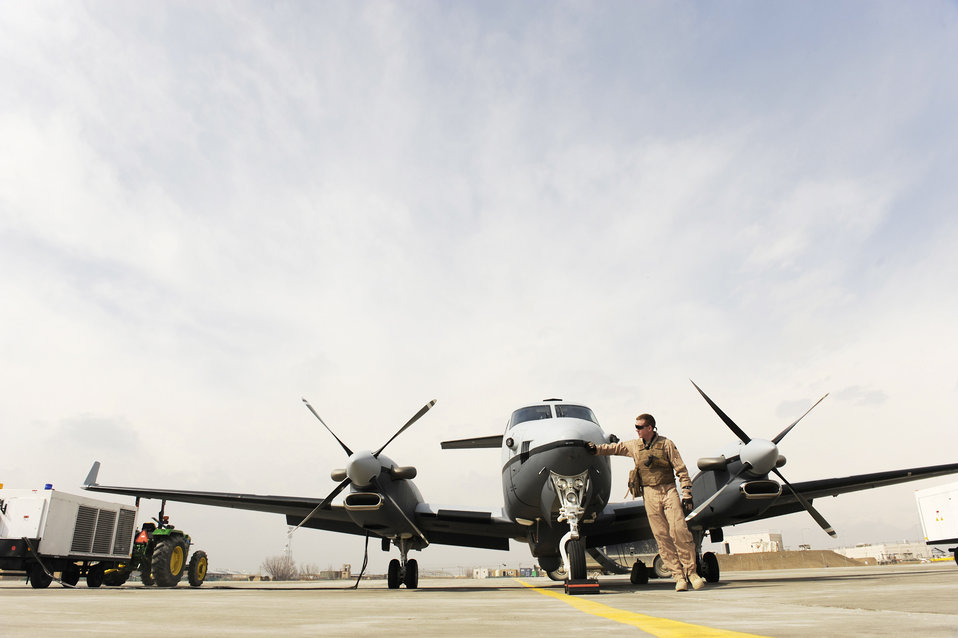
Liberty Airmen watch over Afghan

Lt. Col. Douglas J. Lee, the commander of the 4th Expeditionary Reconnaissance Squadron at Bagram Airfield, Afghanistan, performs a walk-around inspection of an MC-12 Liberty Feb. 27, 2010, prior to a mission. A four-person aircrew flies the modified King Air 350 commercial plane to provide real-time full-motion video and signals information to help military leaders make battlefield decisions.